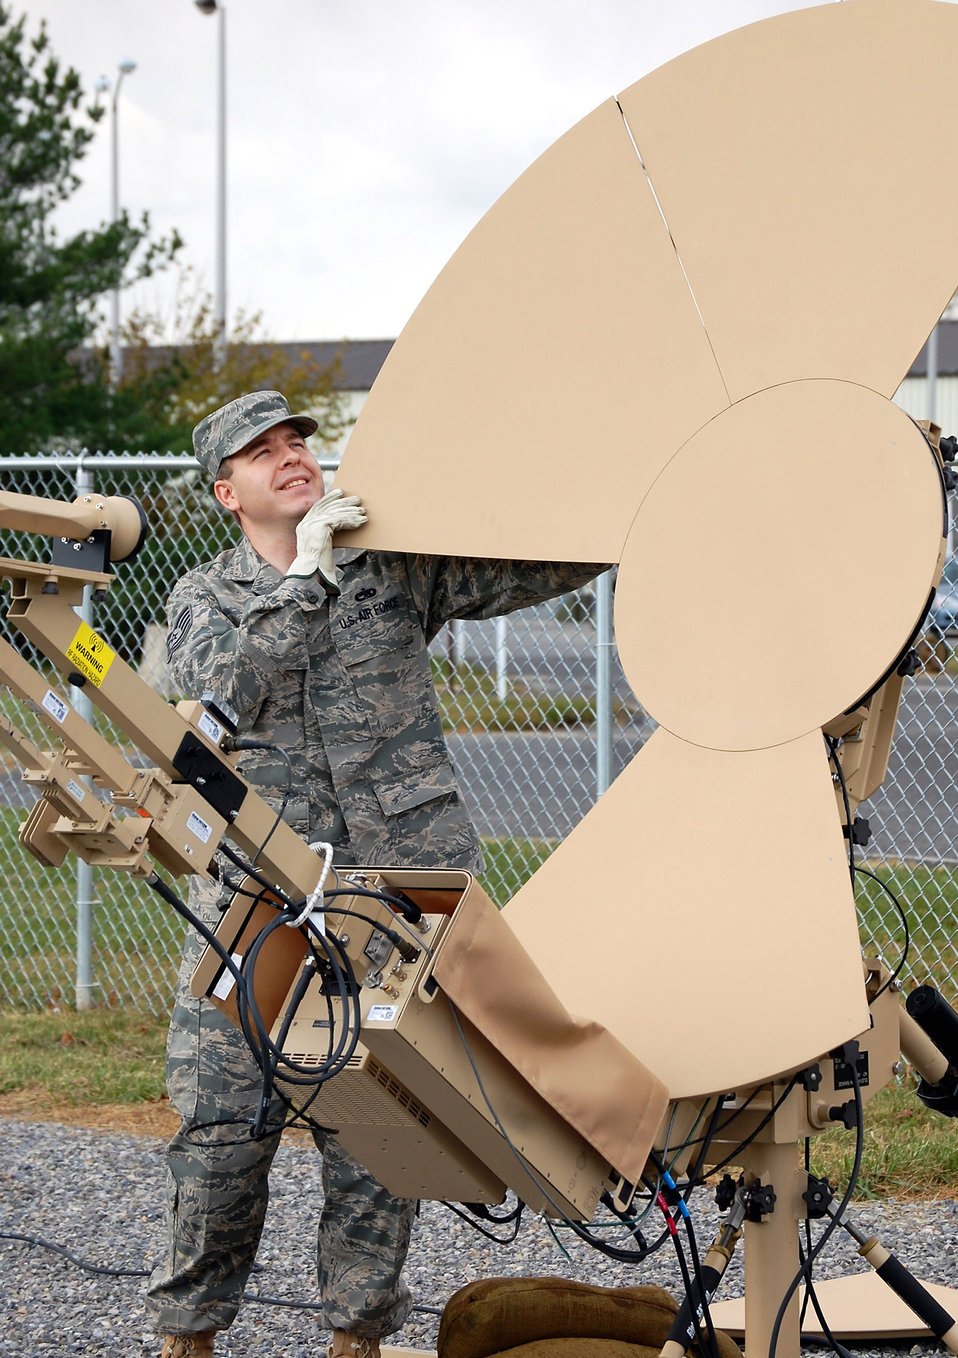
Expeditionary Center adding 'SPICE' to its curriculum

Tech. Sgt. Adrian McDonough prepares a satellite dish used in a Small Package Initial Communications Element package for training in the Mobility Operations School's mobile command, control and communications training facility on the expeditionary center campus Oct. 29 at Fort Dix, N.J. The SPICE Course is a new course in the MOS starting in February 2009. Sergeant McDonough is the course director for the U.S. Air Force Expeditionary Center's SPICE Course.